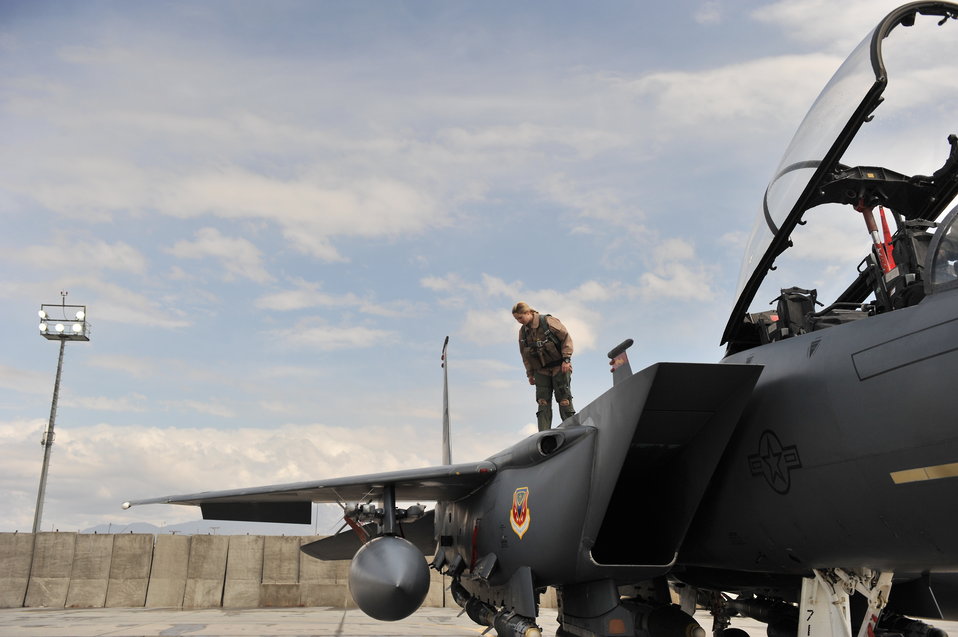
All-female F-15 crew

Capt. Jennifer Morton performs a preflight inspection before take off March 29, 2011, at Bagram Airfield, Afghanistan. Morton is a 389th Expeditionary Fighter Squadron weapon system officer.